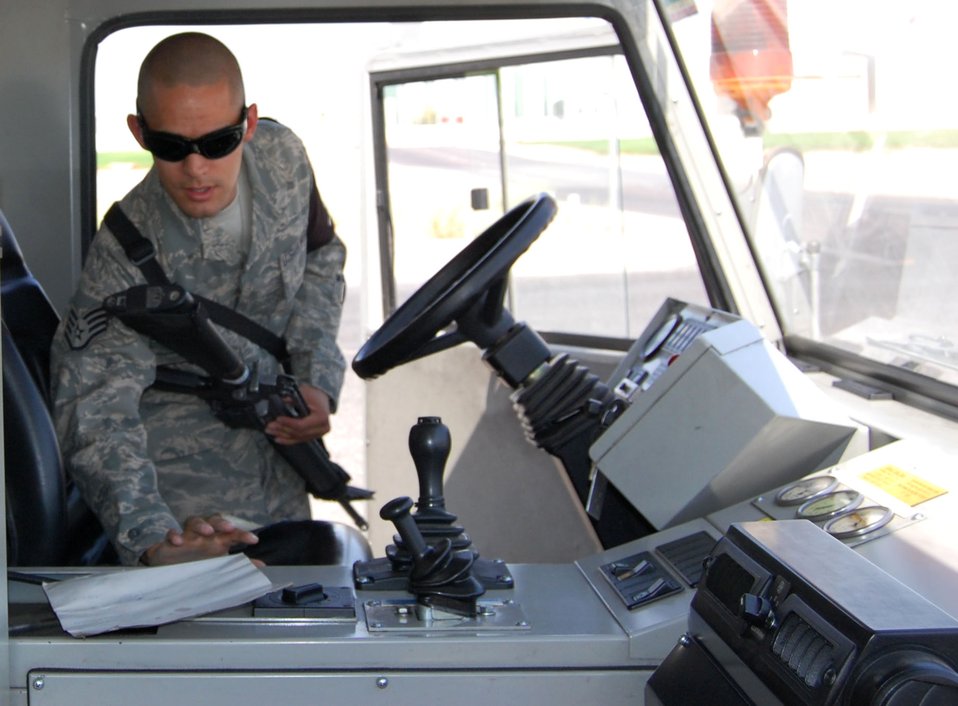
Force protection specialist keep movment safe, seamless

Staff Sgt. Ismael Nava finds a sheet of paper which may contain sensitive information Sept. 25 at an undisclosed location. Sergeant Nava is a 387th Expeditionary Support Squadron force protection specialist from F.E. Warren Air Force Base, Wy.